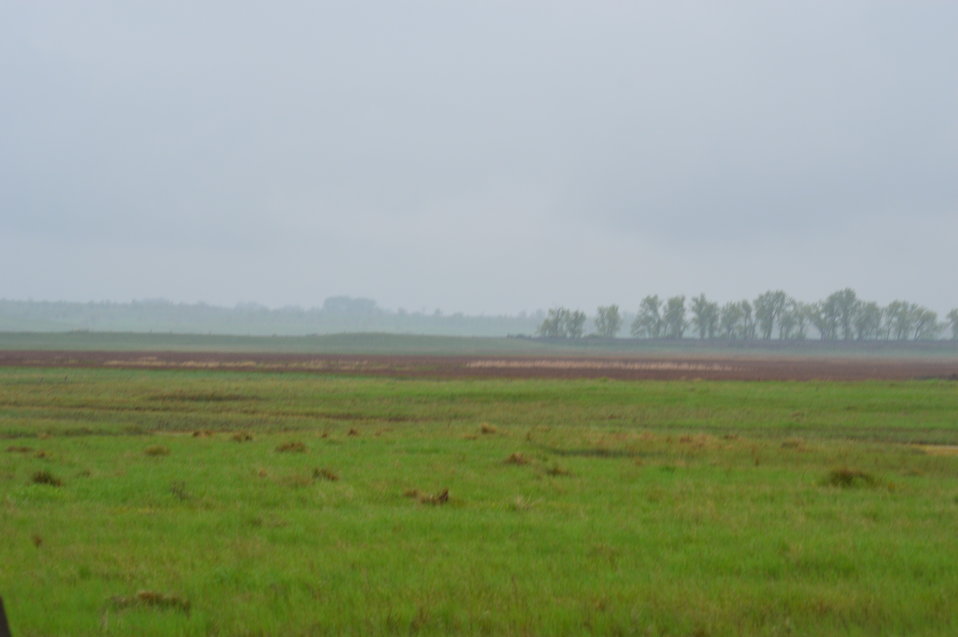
View of Lost Lake NWR

Scenery and wildlife at Lost Lake National Wildlife Refuge in North Dakota.